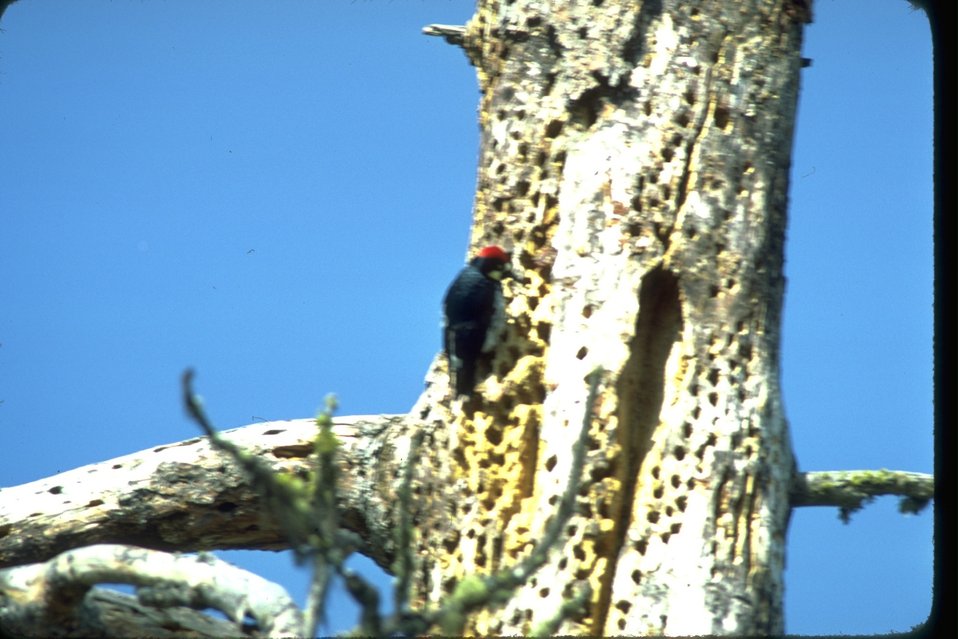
Acorn Woodpecker pecking at tree with many holes.